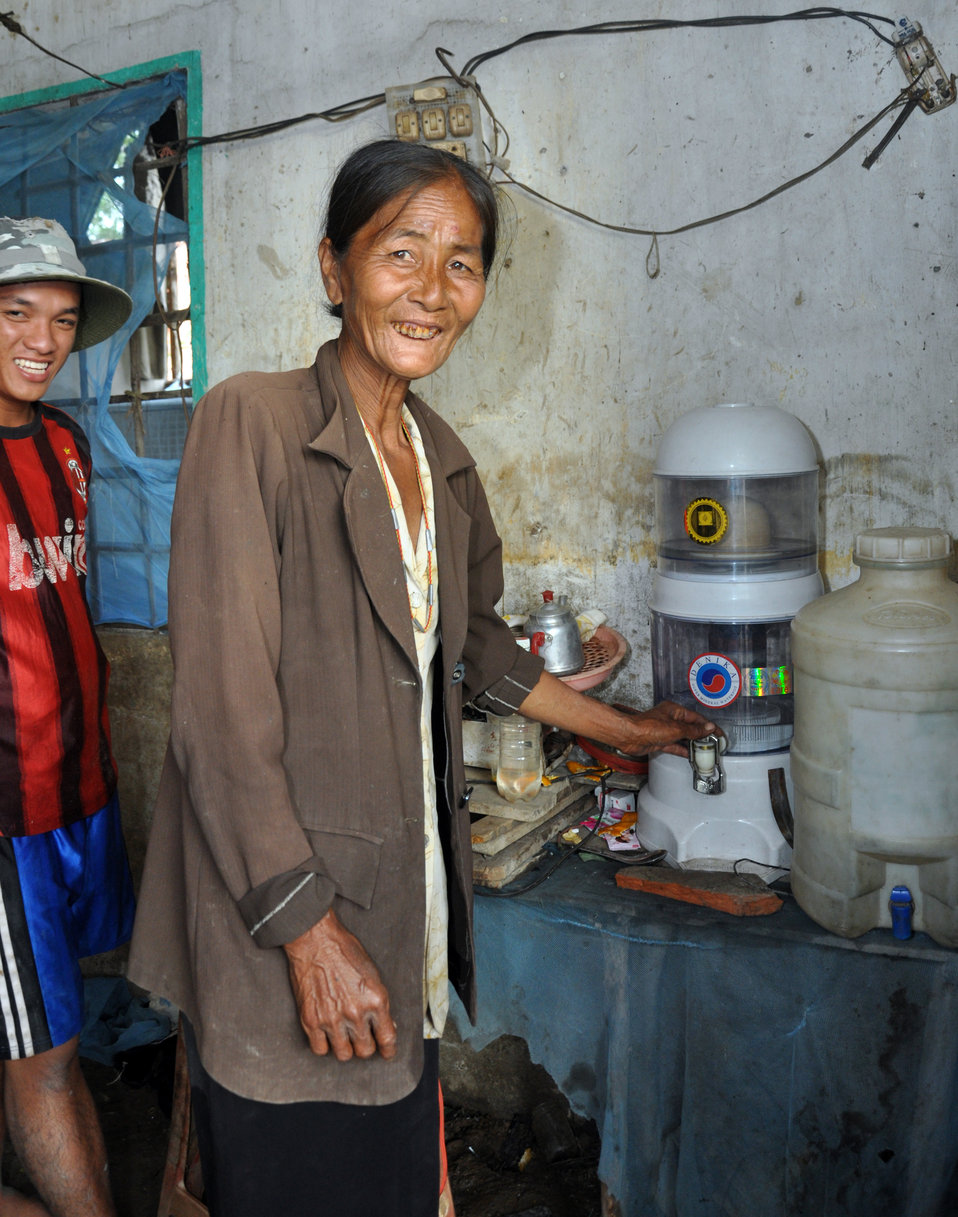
USAID supplies assistance to flood-stricken Long An Province, Tan Thanh District

USAID site visit to Long An Province to visit flood relief beneficiaries